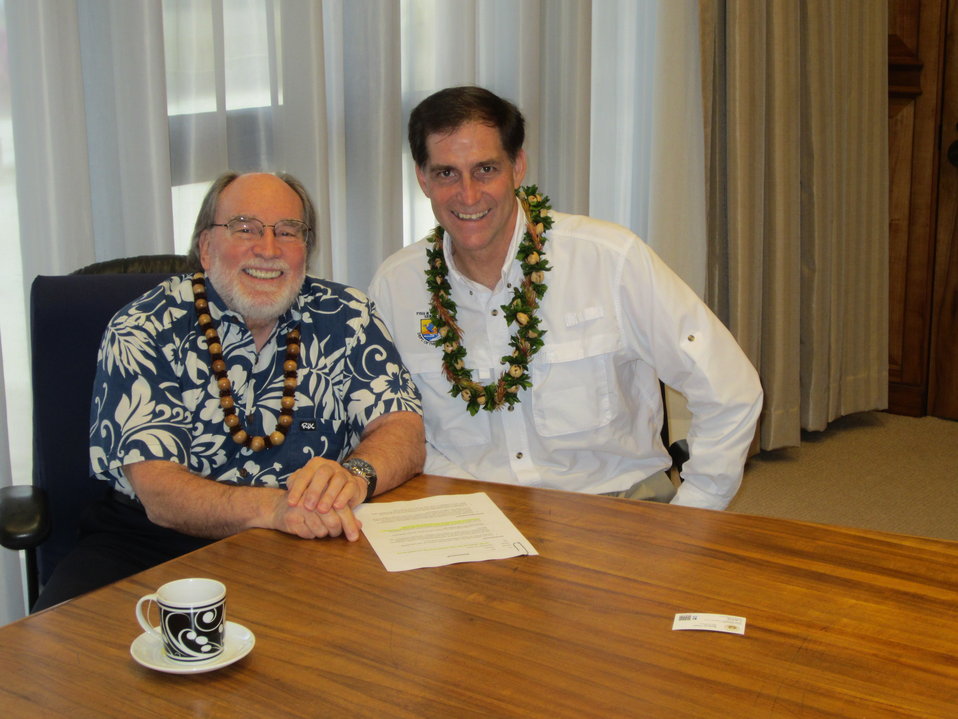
USFWS Director, Dan Ashe with Hawaii Govenor Neil Abercrombie

Hawaii Governor Neil Abercrombie and Dan Ashe discus Hawaii's conservation priorities during his recent visit to the Pacific Region.